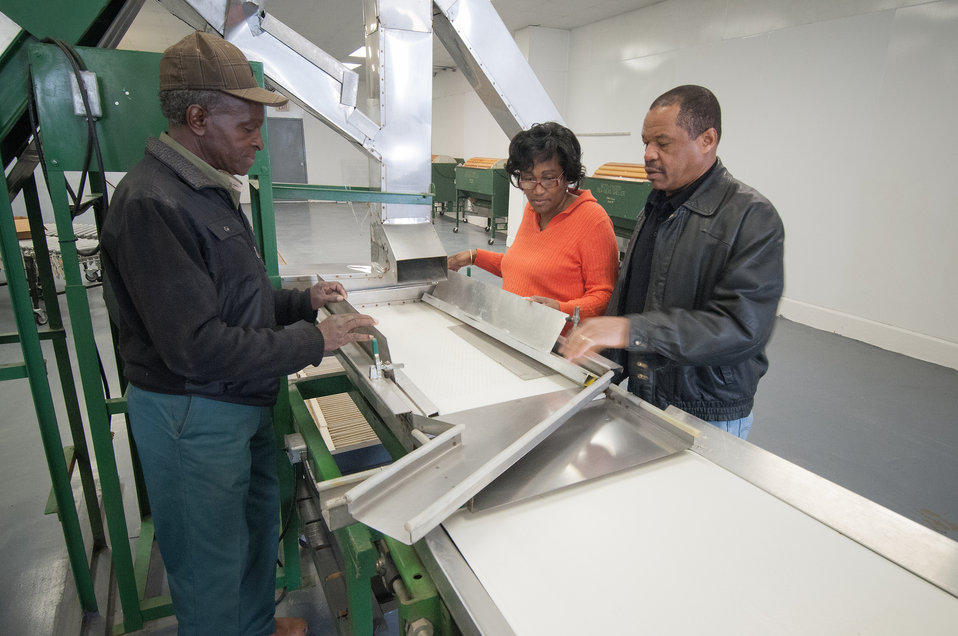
(L to R) University of Arkansas at Pine Bluff, Agriculture Demonstration Outreach Center in Marianna, AR representatives Leon Ellis, Ernest Bradley and Iris Crosby discuss the operation of a purple hull pea processing equipment the Arkansas Delta Seeds of Change (ADSOC) was able to purchase with a U.S. Department of Agriculture (USDA) Rural Development (RD) Rural Business Enterprise Grant (RBEG) on Mar. 5, 2013. USDA in partnership Heifer International (an International organization whose mission is to work with communities to end hunger and poverty and care for the Earth) and various for-profit and non-profit organizations have put in motion the “Seeds of Change Implementation Plan” to use sustainable agriculture to build food systems in the Arkansas Delta. The program has evolved into the ADSCOC Initiative. The ADSOC Initiative assists producers with technical assistance for crop production, management, harvesting, food security, value added products and marketing options and provides access to specialized production and marketing equipment.